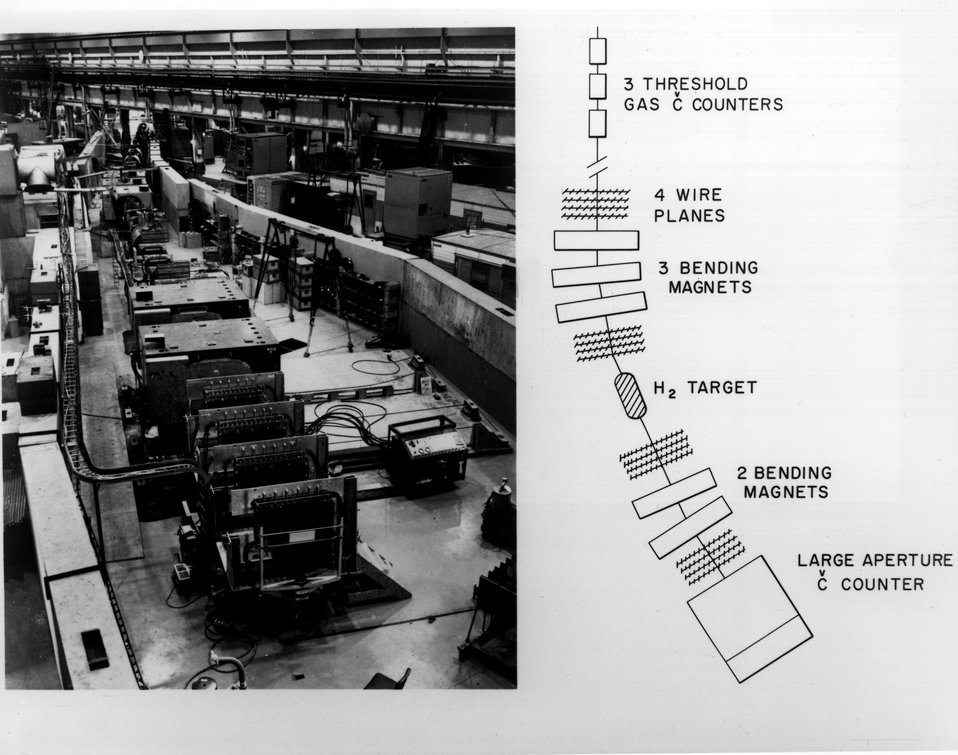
Photograph and simplified sketch of the high resolution wire spark chamber particle spectrometer system in the Experimental Area at the Alternating Gradient Synchrotron. c. 1968